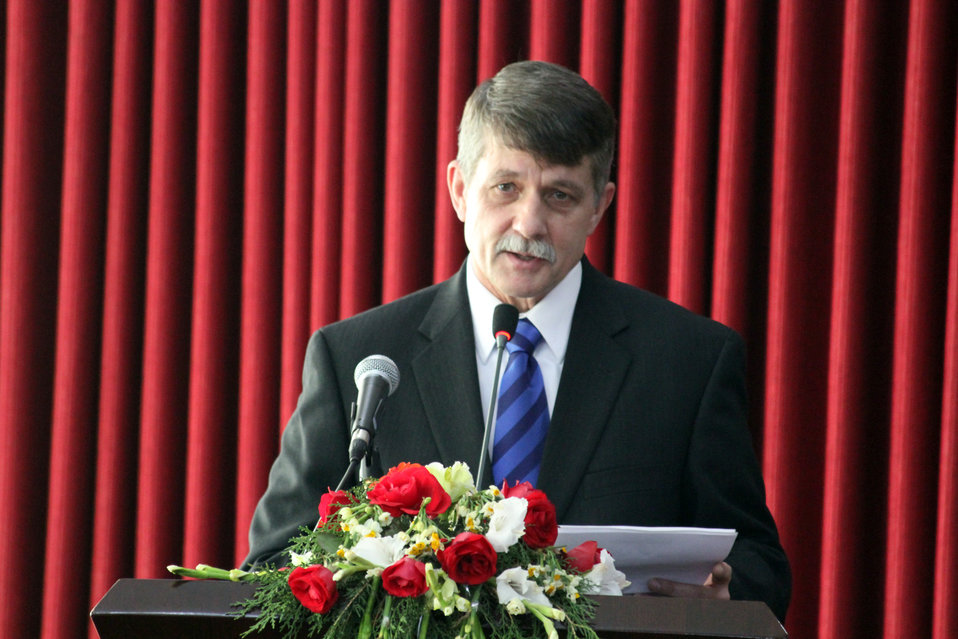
Afghanistan Final National Round of the 2013 Philip C.Jessup International Law Moot Court Competition